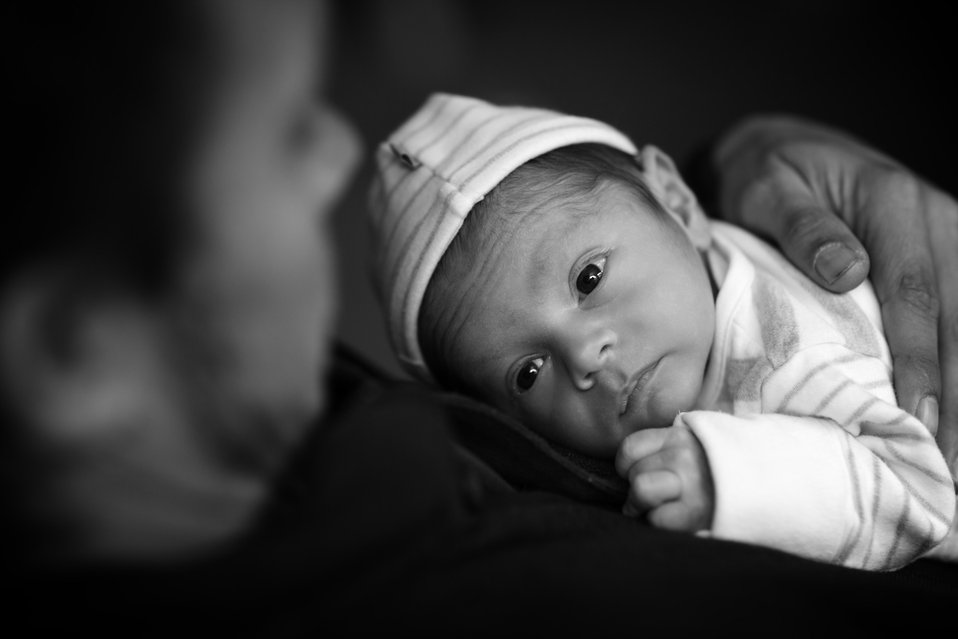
Man holding newborn

Man is holding a newborn baby in black and white.